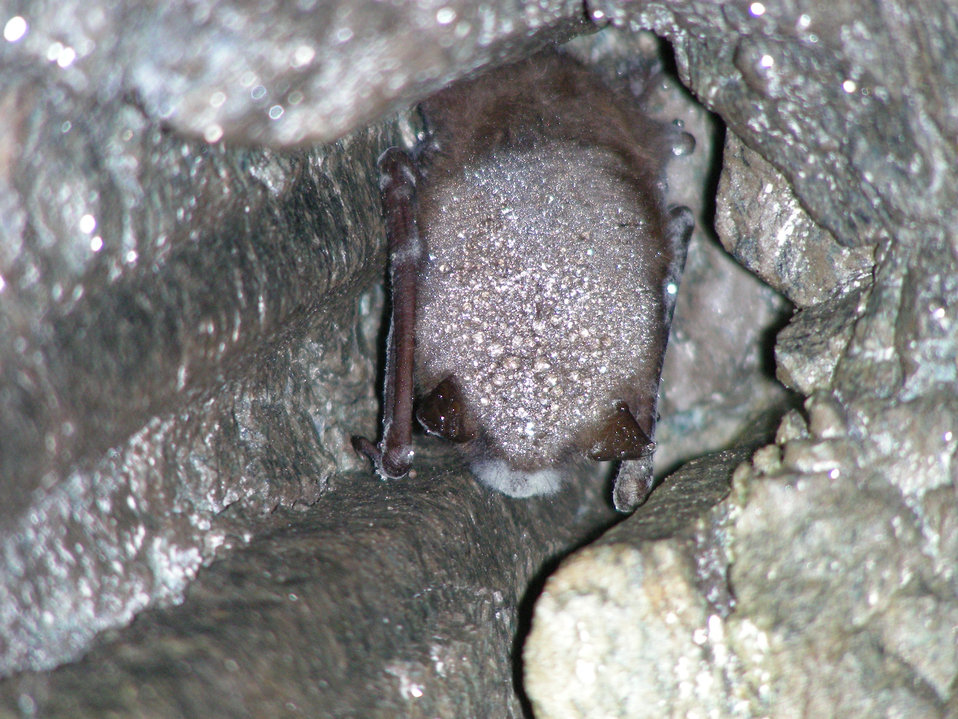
Little brown bat with white-nose syndrome in Greeley Mine, Vermont, March 26, 2009.

Credit: Marvin Moriarty/USFWS

Image size: 2816p (9.4 in.) W x 2112p (7 in.) H, 300 ppi, 5.2